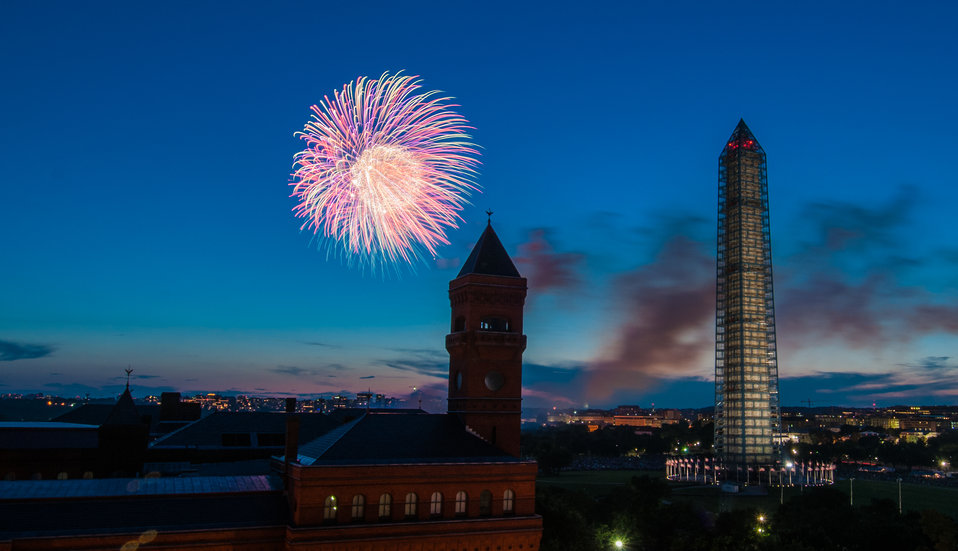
4th of July fireworks as seen from the U.S. Department of Agriculture (USDA) headquarters building, with the USDA Forest Service Yates Building in the foreground, left, and the Washington Monument in Washington, D.C., on July 4, 2013.